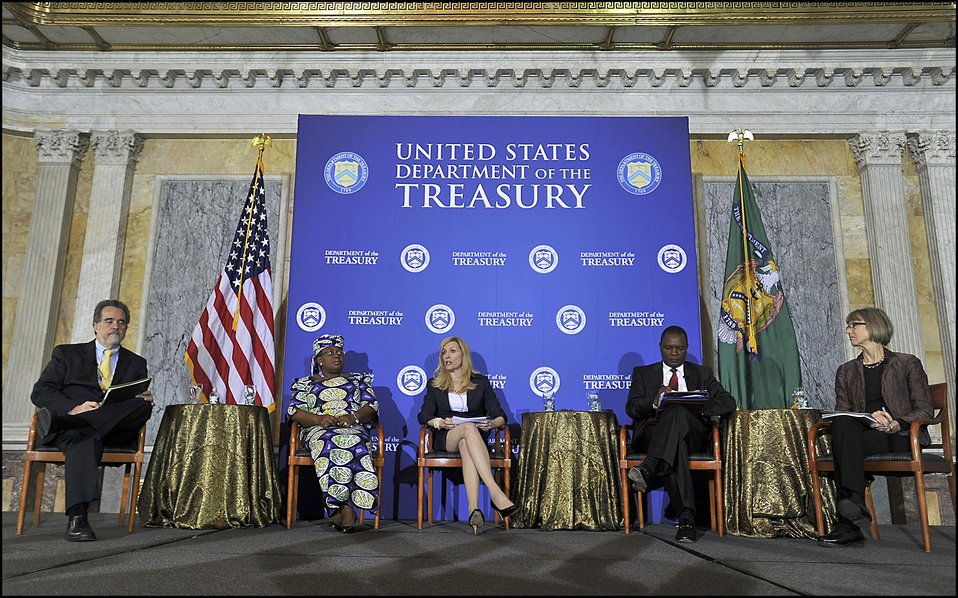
20th Anniversary of Treasury’s Office of Technical Assistance

On Thursday, April 14, 2011, senior Treasury officials and leaders from the development community marked the 20th anniversary of the Treasury Department’s Office of Technical Assistance (OTA) and discussed the office’s efforts to help developing nations strengthen their financial sectors and economies. Following opening remarks, a panel included Under Secretary of the Treasury for International Affairs Lael Brainard, President of the Center for Global Development Nancy Birdsall, Governor and Chairman of the Central Bank of Kenya Prof. Njuguna Ndung’u, President of Oxfam America Raymond C. Offenheiser and Managing Director of The World Bank Dr. Ngozi N. Okonjo-Iweala.